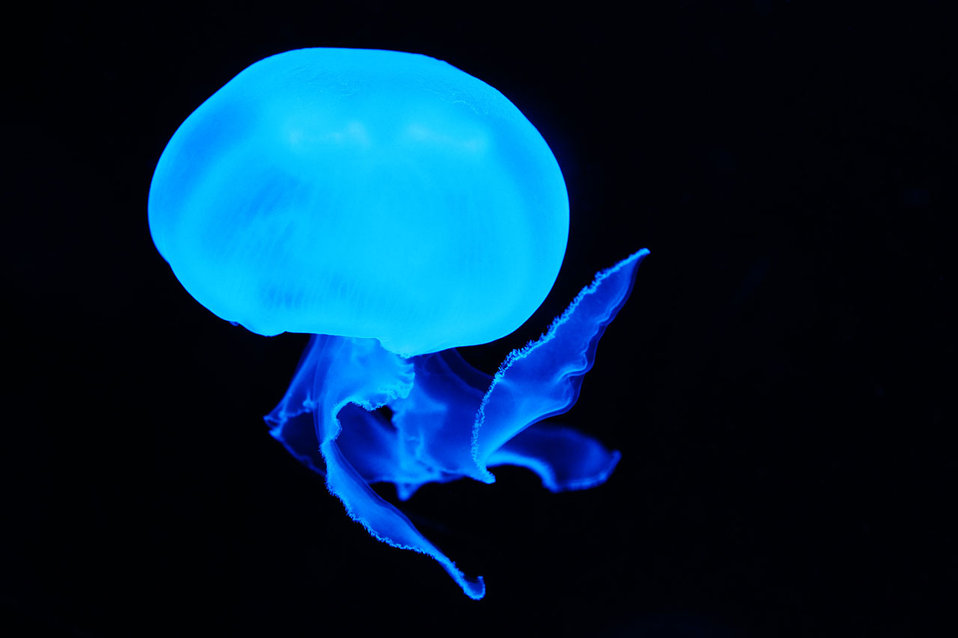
Blue jellyfish

Translucent blue jellyfish against dark background.